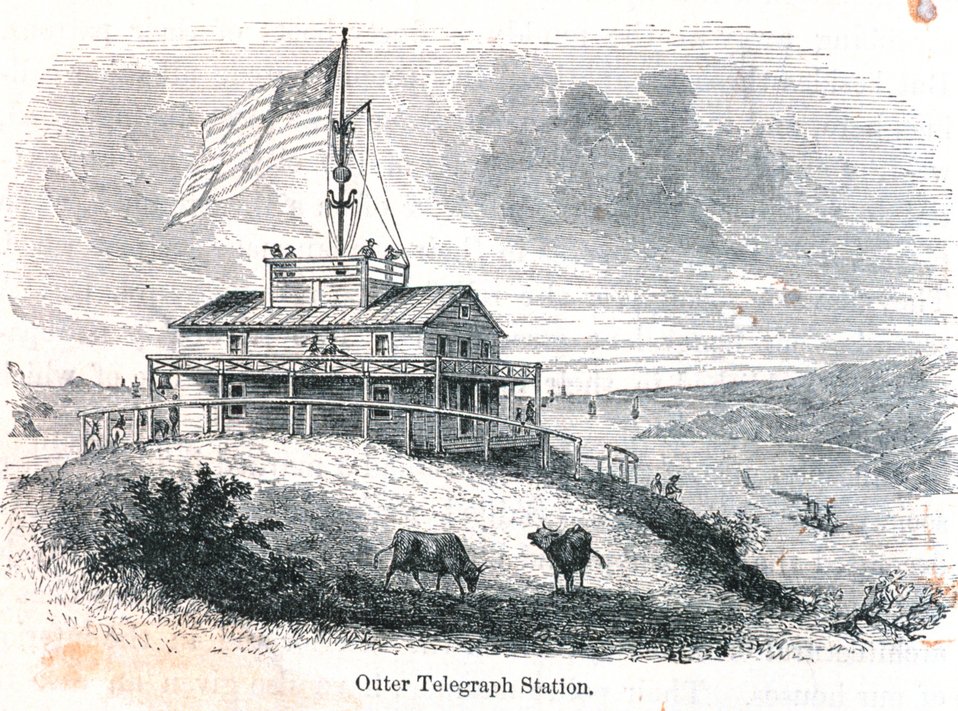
The outer telegraph station. In: 'The Annals of San Francisco'. Frank Soule, John Gihon, and James Nesbit. 1855. Page 464. D. Appleton & Company, New York. F869.S3.S7 1855.